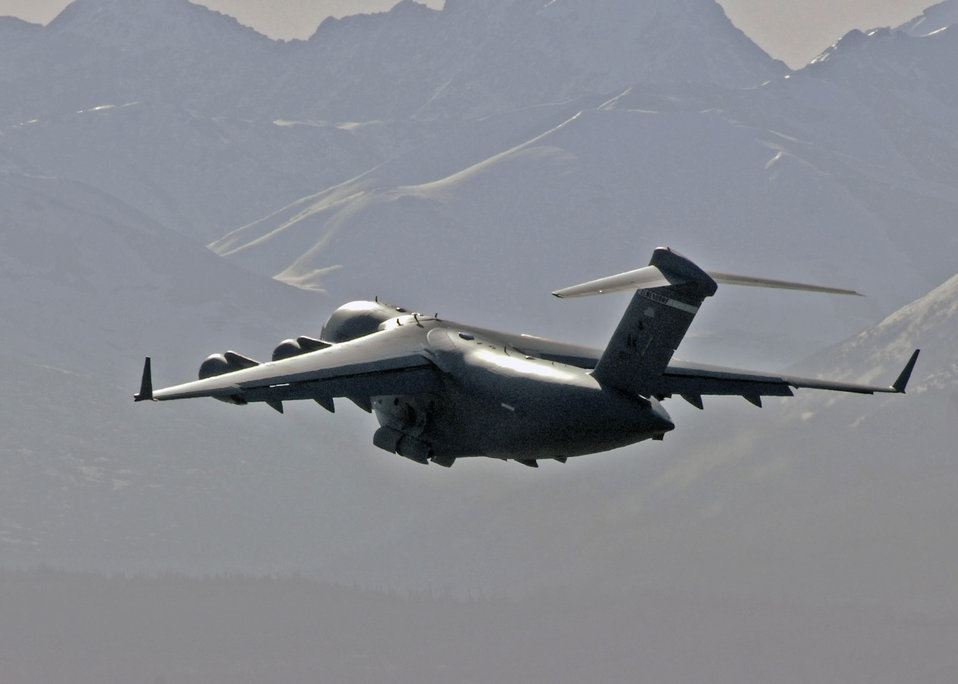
Red Flag-Alaska ends

A C-17 Globemaster III takes off during Red Flag-Alaska 2009 April 30 at Elmendorf Air Force Base, Alaska. This exercise enabled flying squadrons to enhance their fighting capabilities in simulated combat sorties in a realistic threat environment. The 10-day exercise ended May 1.